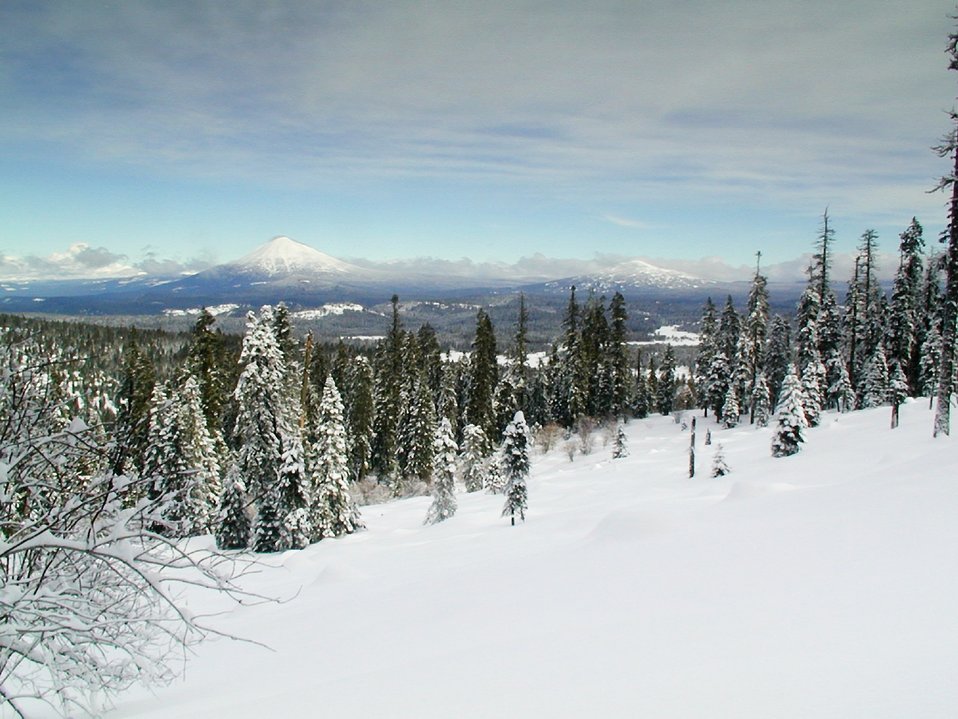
Buck Prairie Cross Country Ski Trail system consists of approximately 17 miles of interconnected trails on public and private lands on the ridges just west of Howard Prairie and Hyatt Reservoirs.